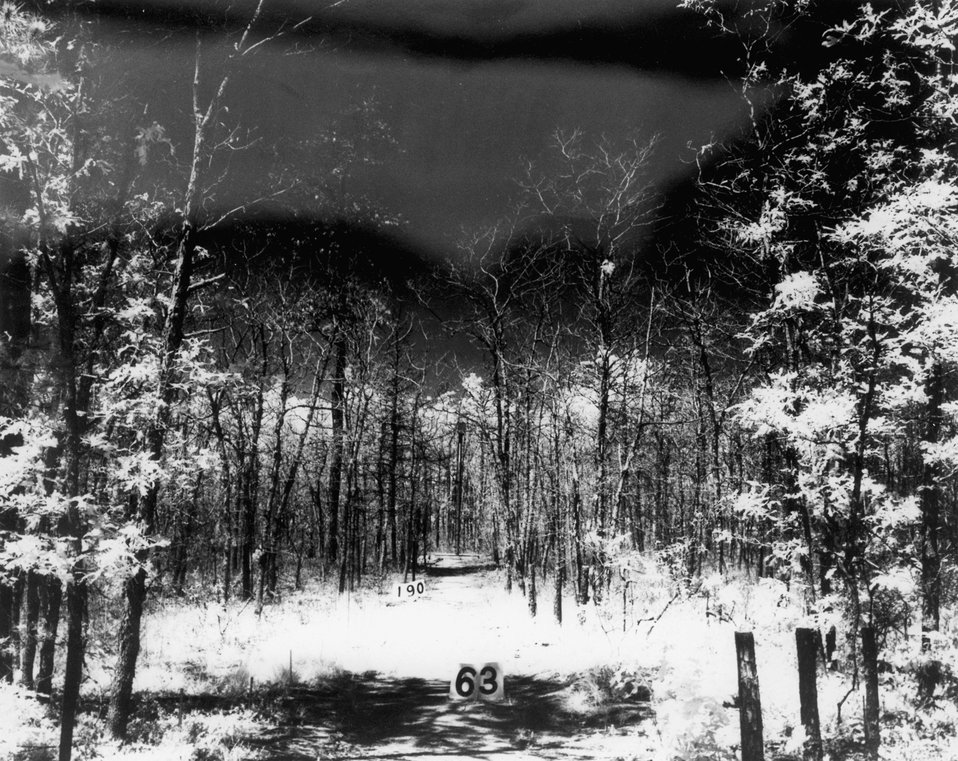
Scene in the Biology Gamma Forest, looking toward the metal pipe housing the 95000-curie source of cesium-17. c. 1963